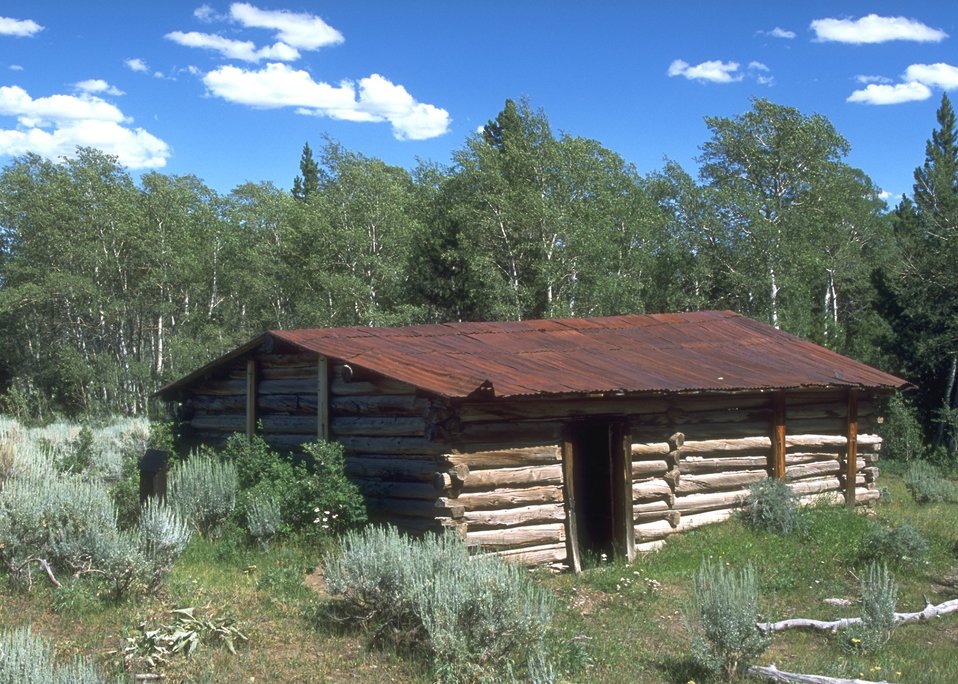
Structures at Miners Delight, Lander Field Office.